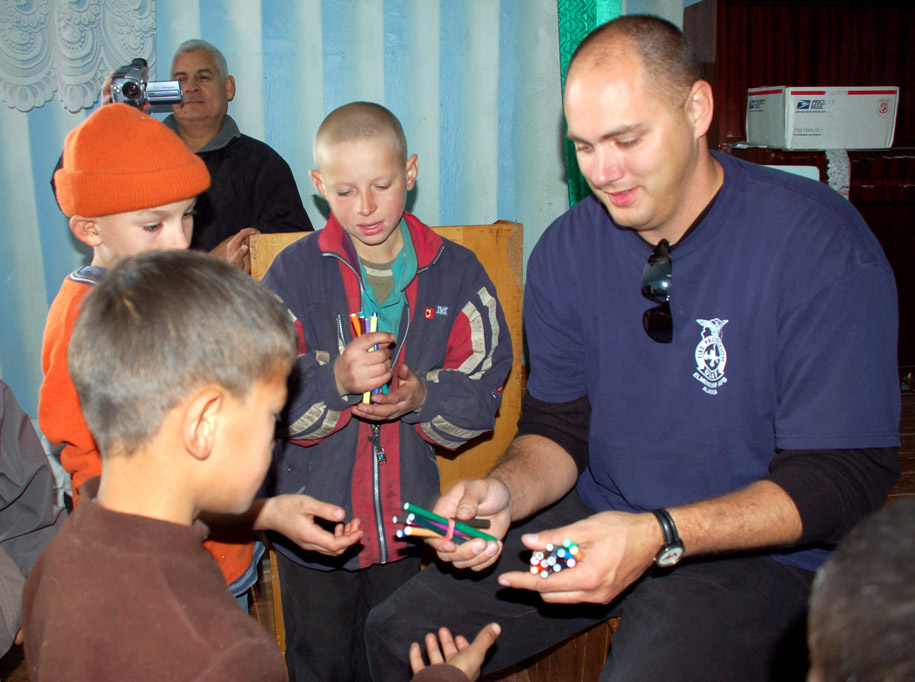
Airmen visit Tok Mok orphanage

Master Sgt. Joseph Debets, 376th Expeditionary Civil Engineer Squadron, passes out colored markers to children at the Tok Mok II Orphanage, near Manas Air Base, Kyrgyzstan, Oct. 29.